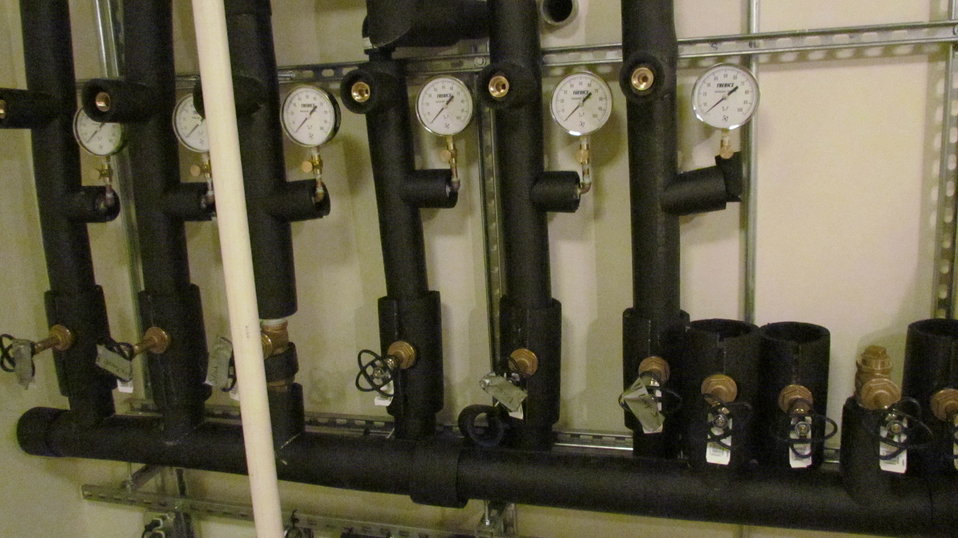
Termination of the three different earth-coupled loops within the facility. The three loops consists of the horizontal loop in the back yard, the slinky coil system located in the front yard and the deep well system located on the west side of the facility.